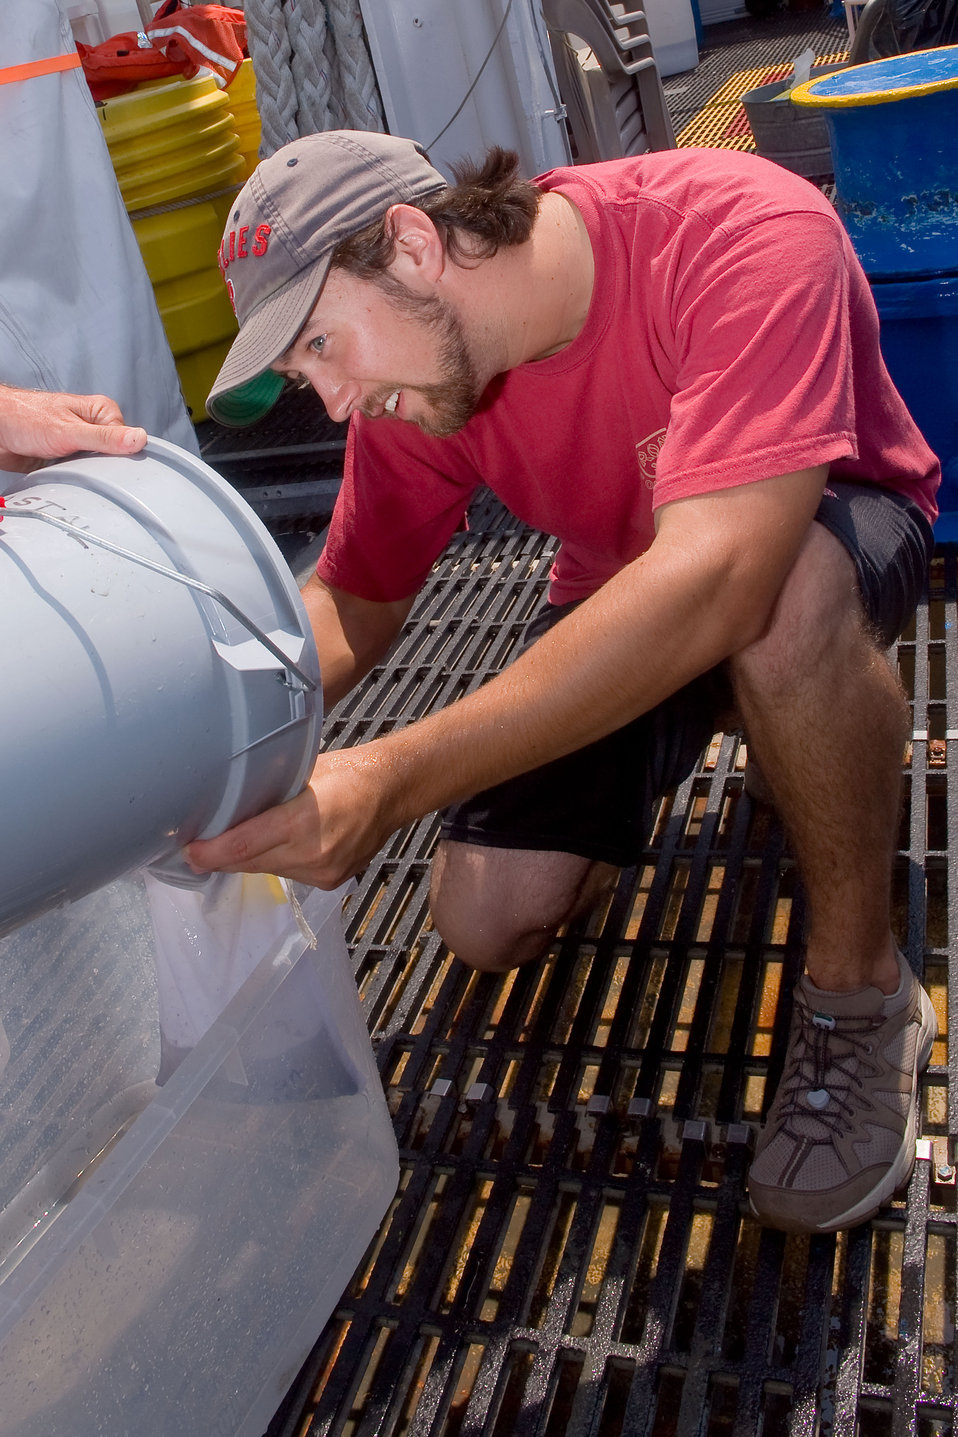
August 2010, Quite an opportunity for a student vollunteer

Bob Koroncai collects sifted sample. Bags are tagged with site location information. Species in sample are identified and counted.